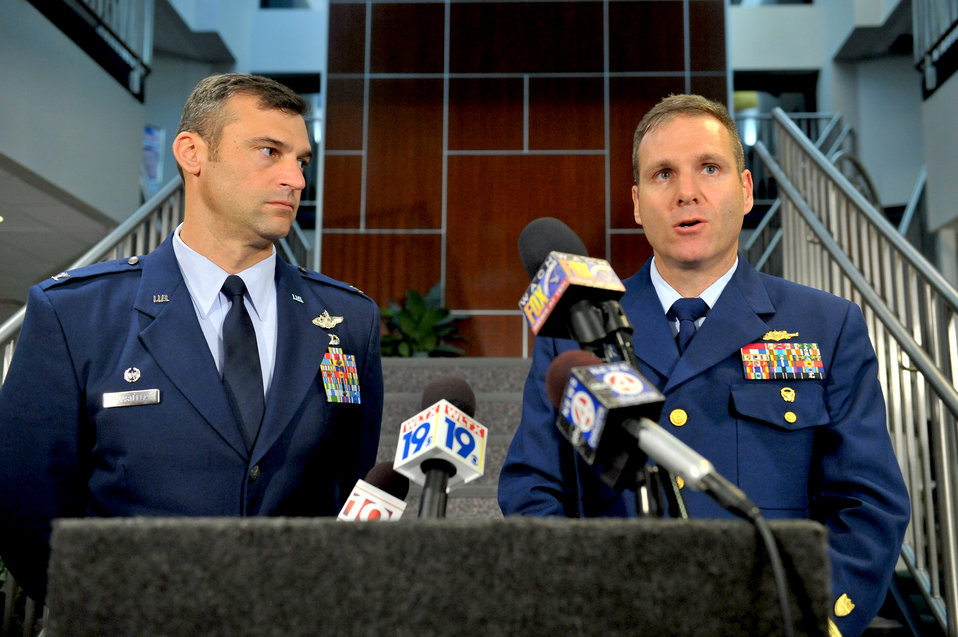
Shaw pilot didn't eject

Captain Michael McAllister, U.S. Coast Guard Sector Charleston commander, right, addresses the media with Col. Joseph Guastella, 20th Fighter Wing commander, Oct. 17. The joint service press conference announced that the search for a missing Air Force pilot involved in a mid-air collision Oct. 15, Capt. Nicholas Giglio, has been suspended and has turned into a recovery operation. The investigation of the mid-air collision revealed the impact breached Captain Giglio's canopy, causing fatal injuries.